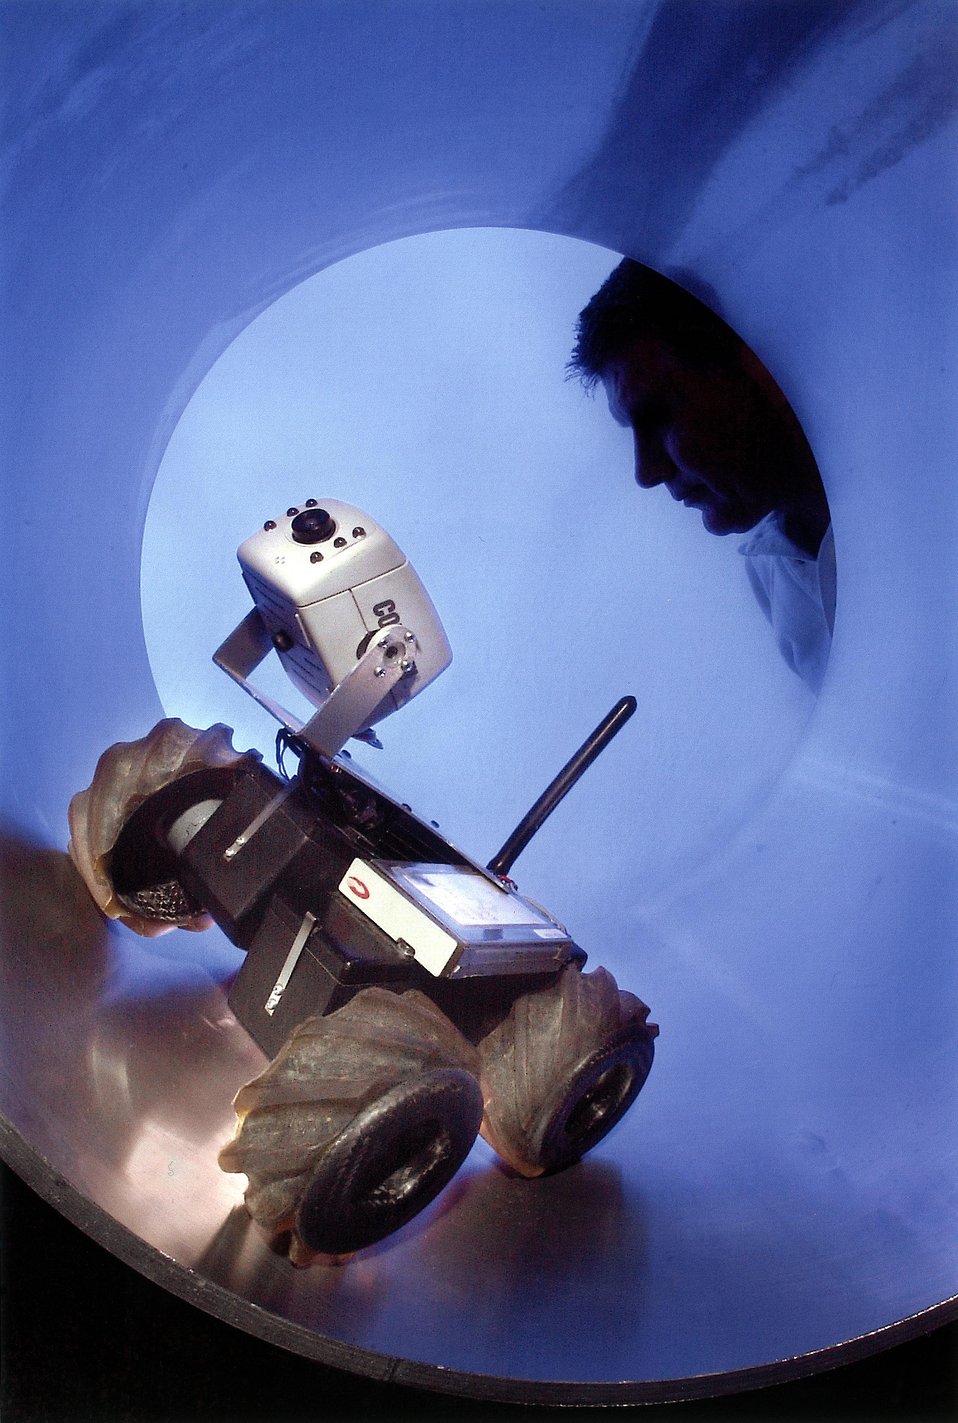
A PIPELINE INSPECTION ROBOT DEVELOPED AT SANDIA'S INTELLIGENT SYSTEMS AND ROBOTICS CENTER.

THIS KIND OF SMALL ROBOTIC INSPECTOR COULD AID THE GAS DISTRIBUTION INDUSTRY. SANDIA IS ALSO INVOLVED WITH PIPELINE RELIABILITY AND SAFETY THROUGH ITS ENERGY AND CRITICAL INFRASTRUCTURES CENTER.